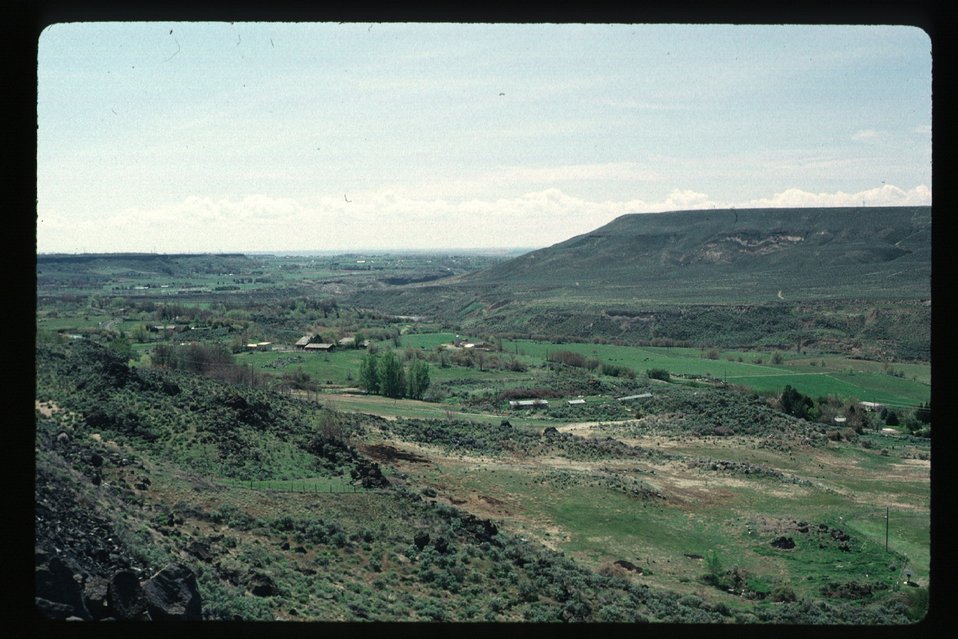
Hagerman Valley Scenic USRD Upper Snake River District